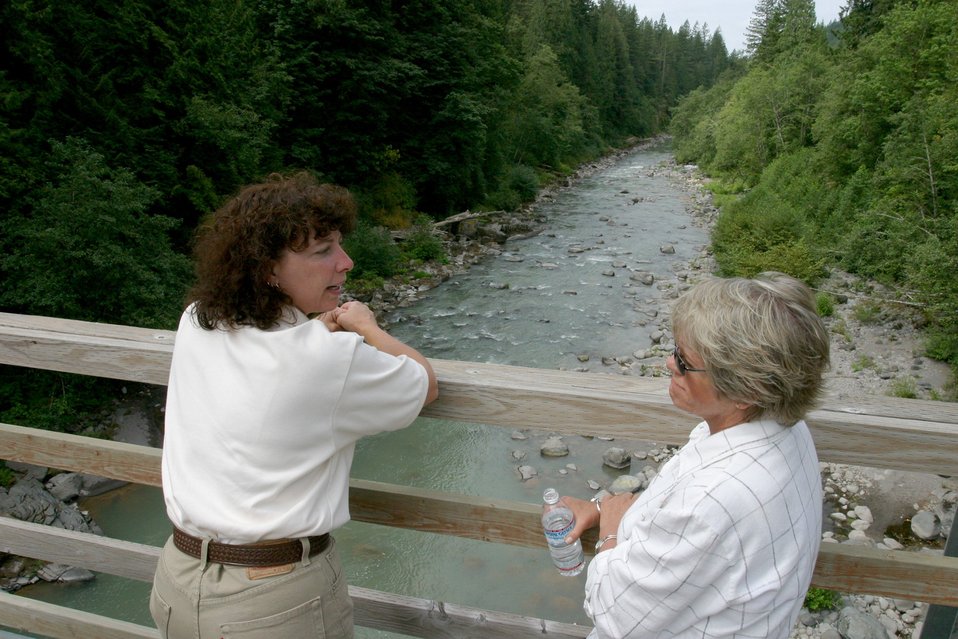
Belle Smith, Cascade Resource Natural Resource Advisor, and Kathleen Clare, BLM Director discuss the Sandy River at Marmot Dam scheduled to be removed in 2006.